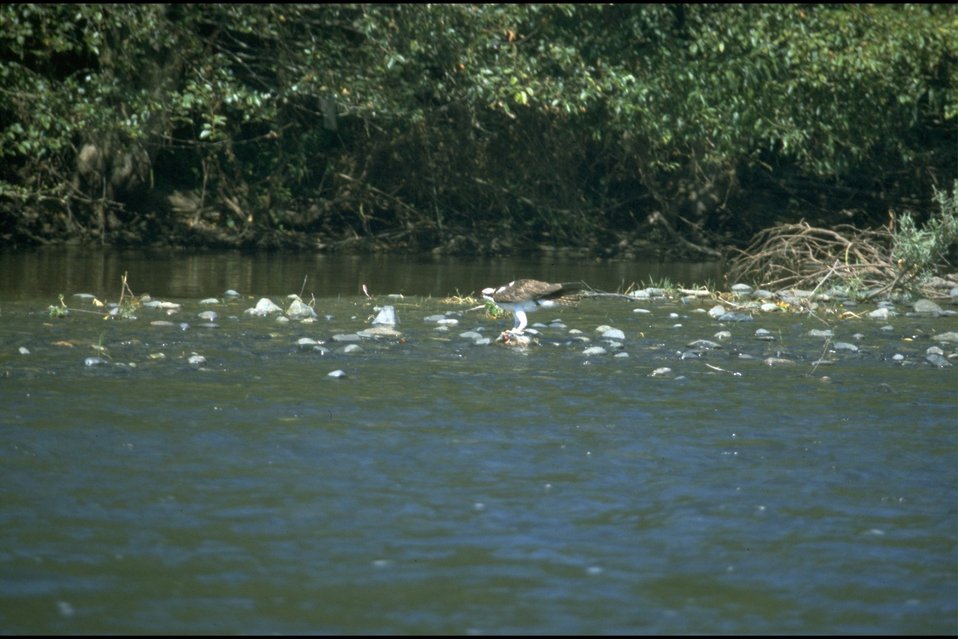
Rogue River - Osprey.